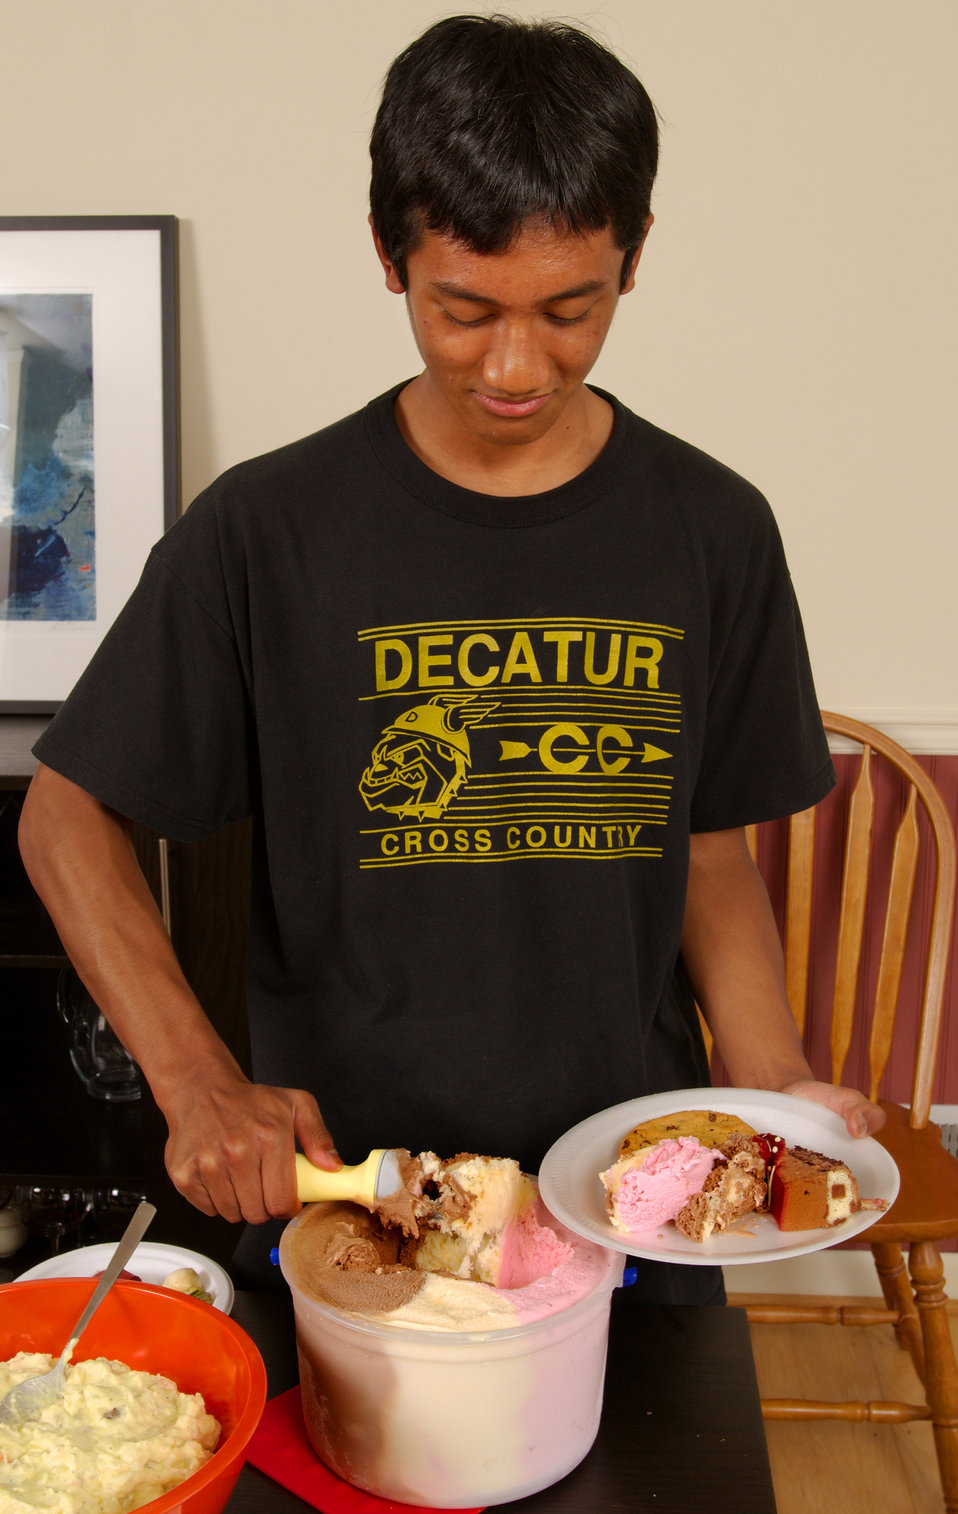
This young man was a guest at a dinner party, and was in the process of plating some dessert choices he'd made, including some cake and ice cream. As it is said, everything in moderation, and every once in a while, some sugary, creamy foods can be consumed and enjoyed. It's when the consumption of these foods becomes a regular aspect to one's diet, that it becomes unhealthy. Hopefully, the foods in this instance were created using low-fat, and low sodium ingredients, which would be the healthier choice. If you're a diabetic, follow the guidelines established by your physician when deciding to consume such foods.